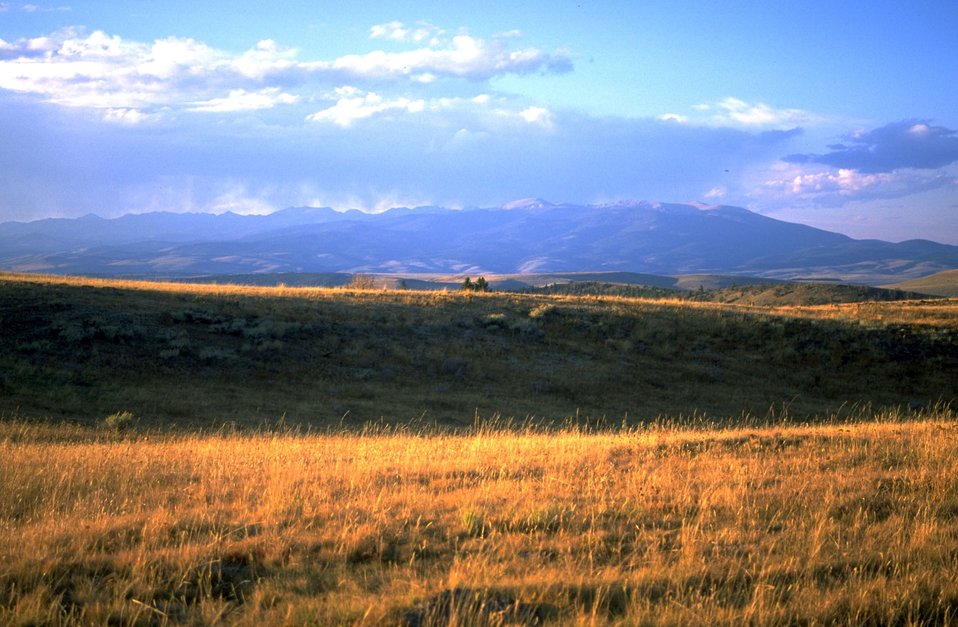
The sun shining on the grass with the Spanish Peaks in the background